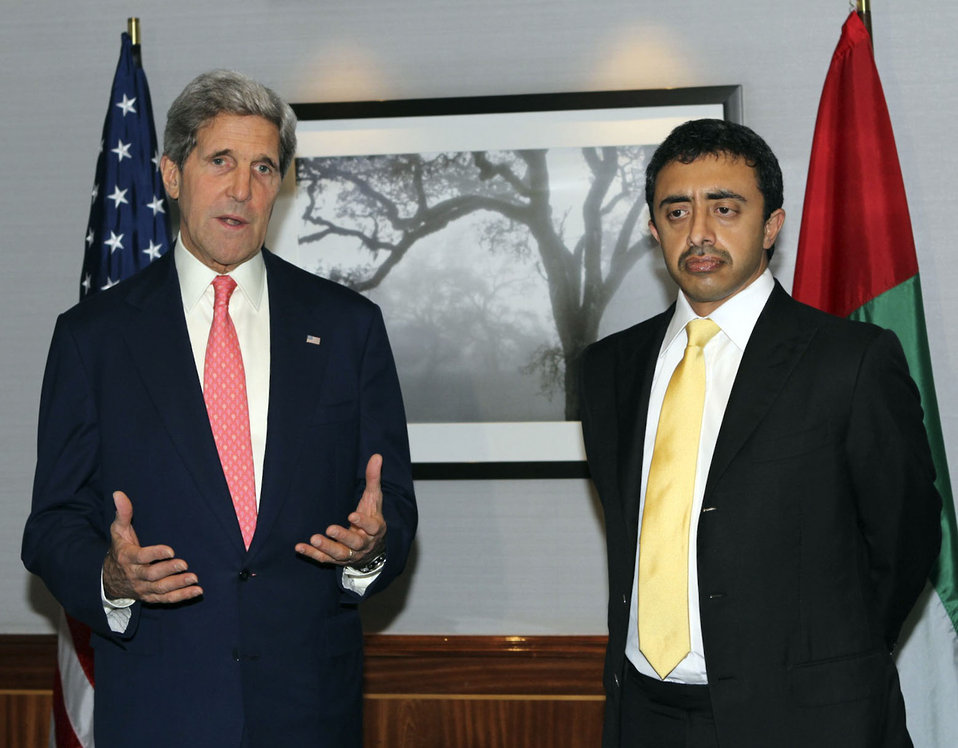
Secretary Kerry Meets With UAE Foreign Minister Abdullah

U.S. Secretary of State John Kerry talks to reporters with the United Arab Emirates Foreign Minister Abdullah bin Zayed in London, United Kingdom, on August 2, 2013.